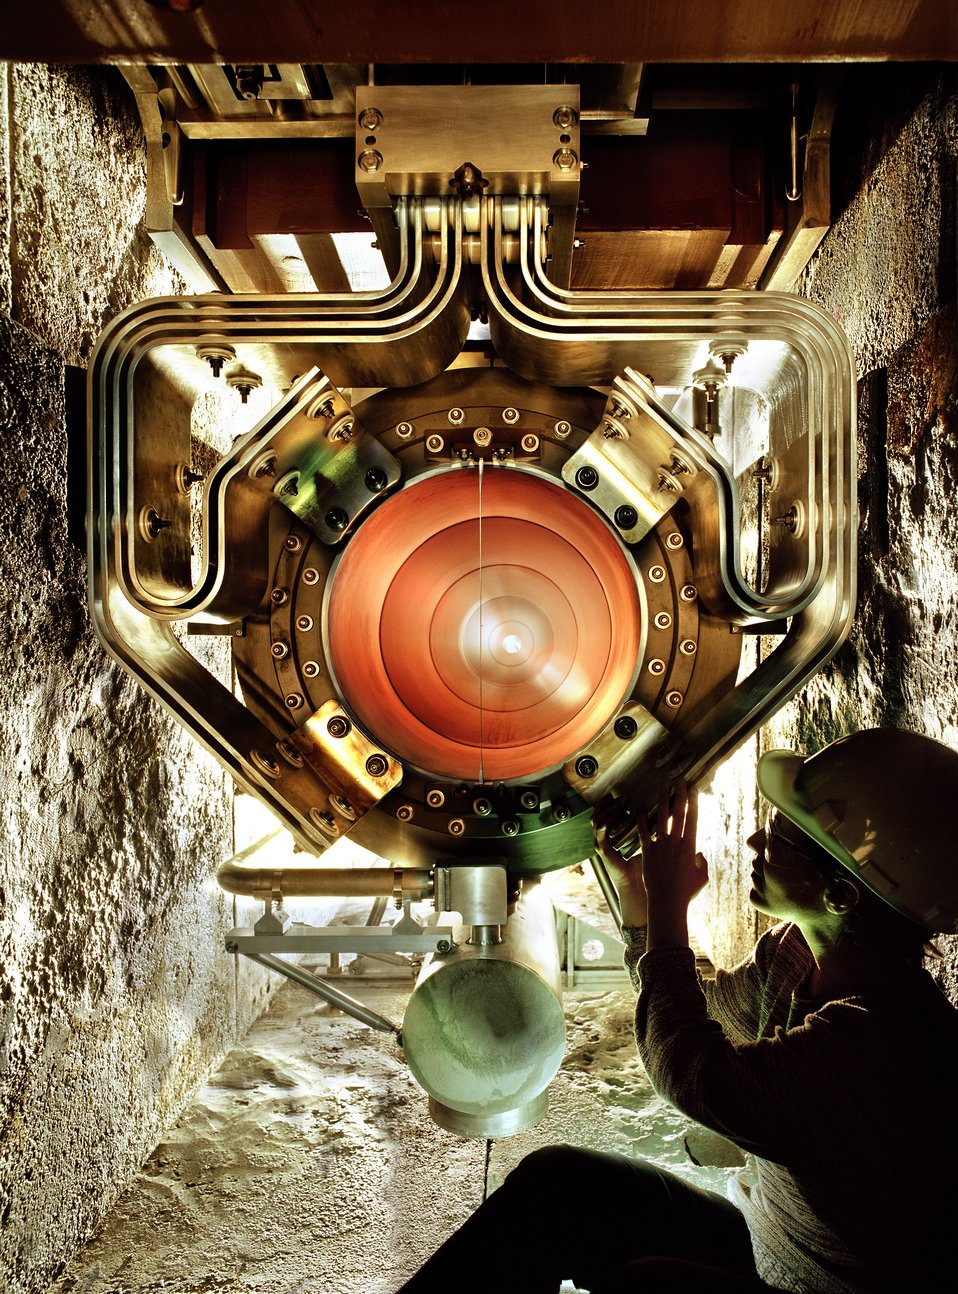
Focusing horn for neutrino production at the Fermi National Accelerator Facility.